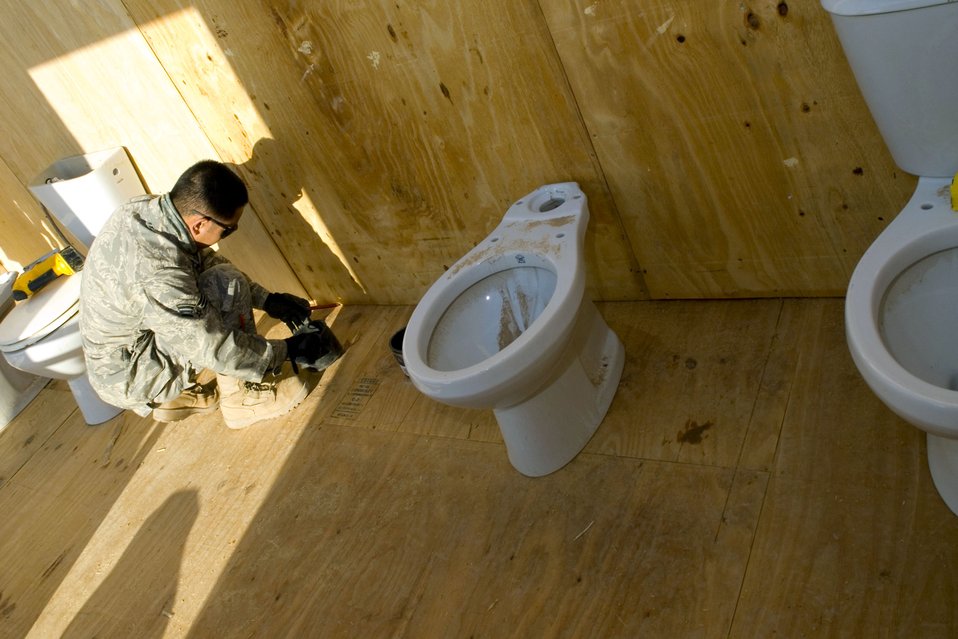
Fixing the 'hole' thing

Senior Airman Ernesto Racoma measures the distance between toilets on a shower latrine unit Jan. 15 at Balad Air Base, Iraq. The placement measurements allow the Airman to ensure a proper fit when installing the toilets. Airman Racoma, a 732nd Expeditionary Civil Engineer Squadron utility technician, is deployed from Beale Air Force Base, Calif.